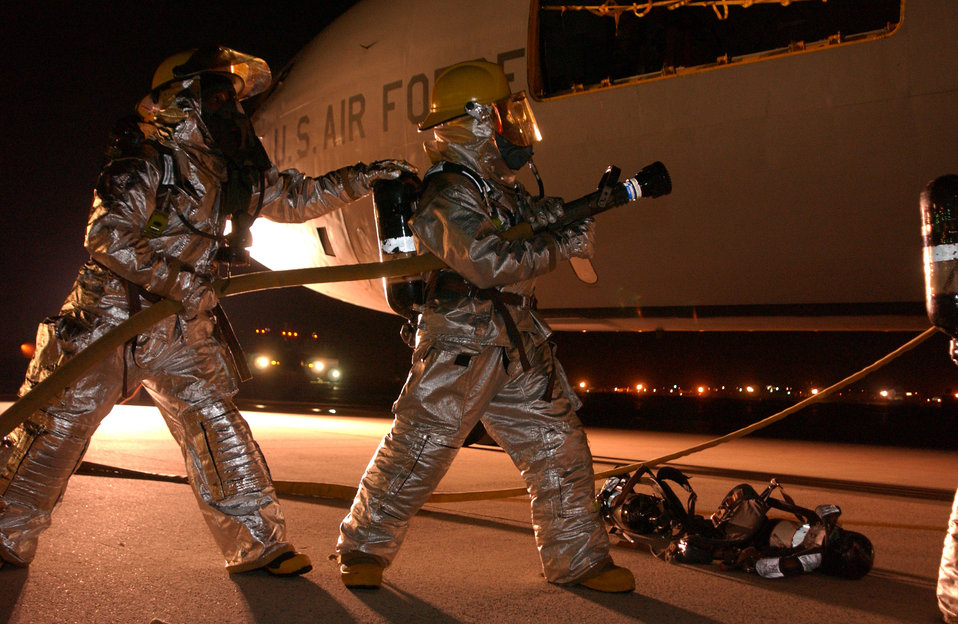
Fire response

Staff Sgt. John Garcia (left) helps his partner as they simulate extinguishing an aircraft fire during a combat capability exercise Oct. 17 at Kadena Air Base, Japan. The 18th Wing exercise from Oct. 13 to 19 tests the wing's ability to respond to a wartime situation. Sergeant Garcia is a firefighter with the 18th Civil Engineer Squadron .